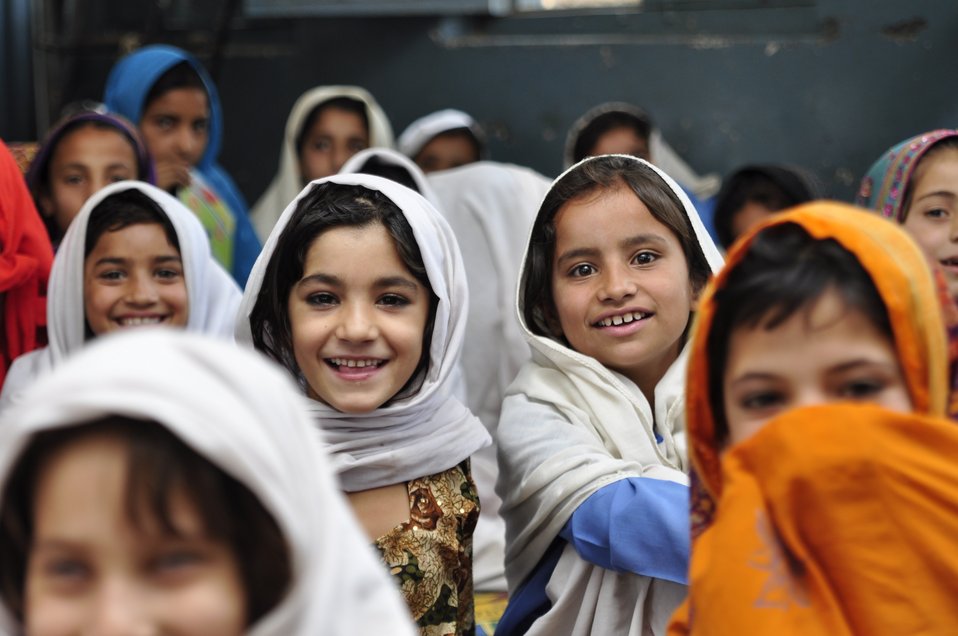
Reading 01